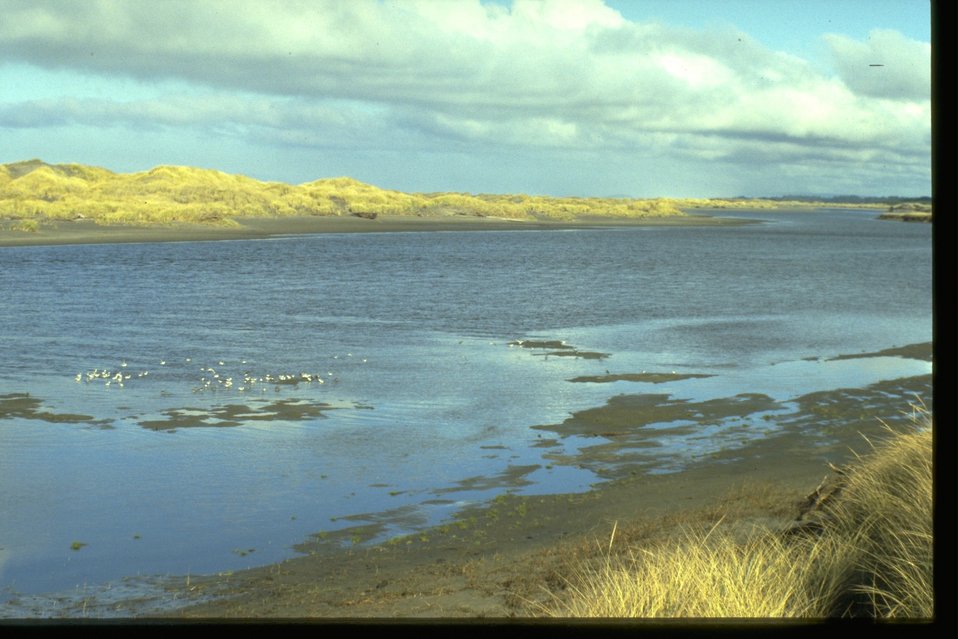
New River.